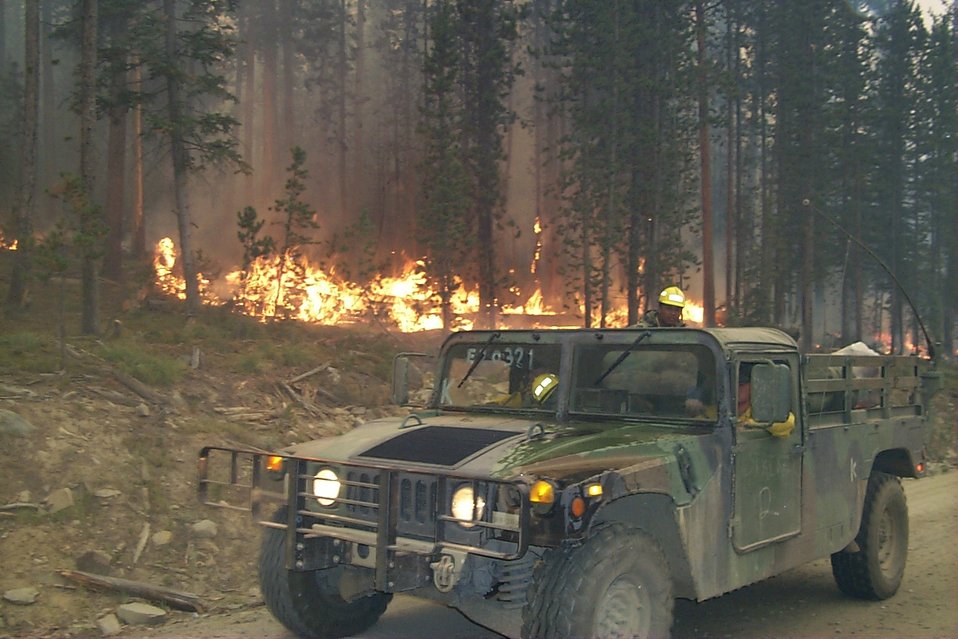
Humvee near fire Fire Clearwater Fire Salmon Field Office USRD Upper Snake River District